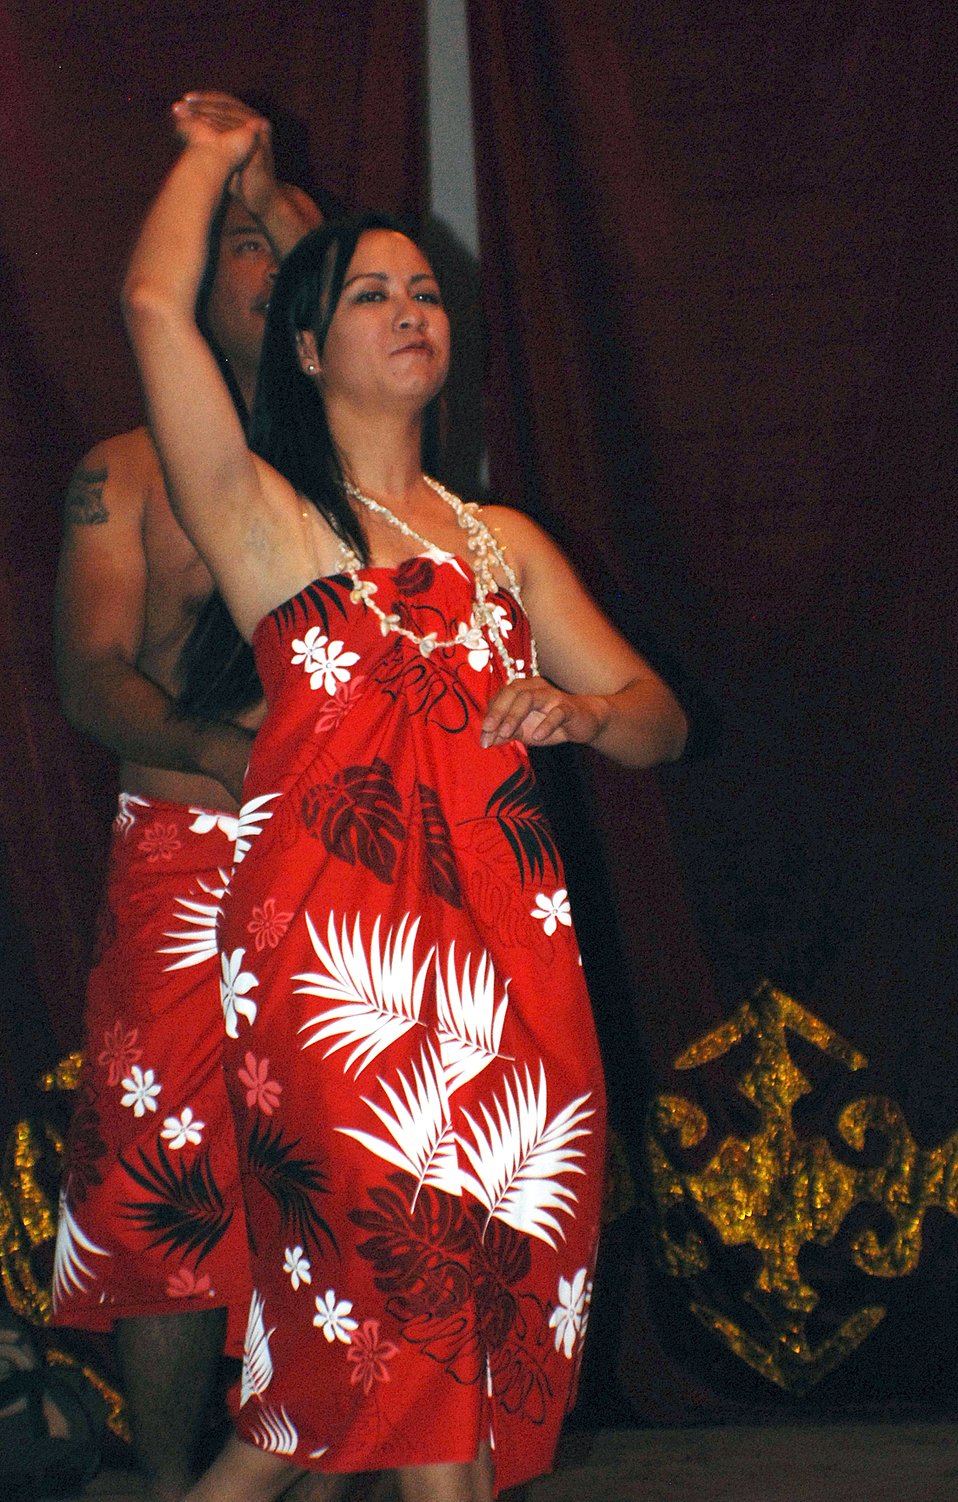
Deployment provides Airmen chance to make lasting relationships

Staff Sgt. Dora Sarmiento performs a traditional Pacific Island dance with Senior Airman Sean Roxas during the Pacific Island Cultural Day of Sharing Aug. 20 in the village of Jeny Pahkta, Kyrgyz Republic. Airmen from Manas Air Base performed for more than 100 children from the village, which the 376th Expeditionary Force Support Squadron has sponsored and supported for six years.